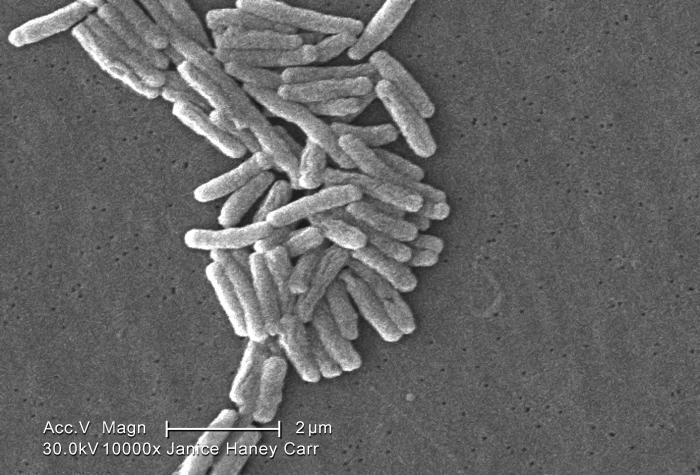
Under a moderately-high magnification of 10000X, this scanning electron micrograph (SEM) depicted a number of Gram-negative Legionella pneumophila bacteria. Please see PHIL 11092 through 11152 for additional SEMs of these organisms, specifically PHIL 11136 for a colorized version of this image. Of particular importance, is the presence of polar flagella, and pili, or long streamers, which due to their fragile nature, in some of these views seem to be dissociated from any of the bacteria. For a better view of these cellular appendages, see the colorized version.